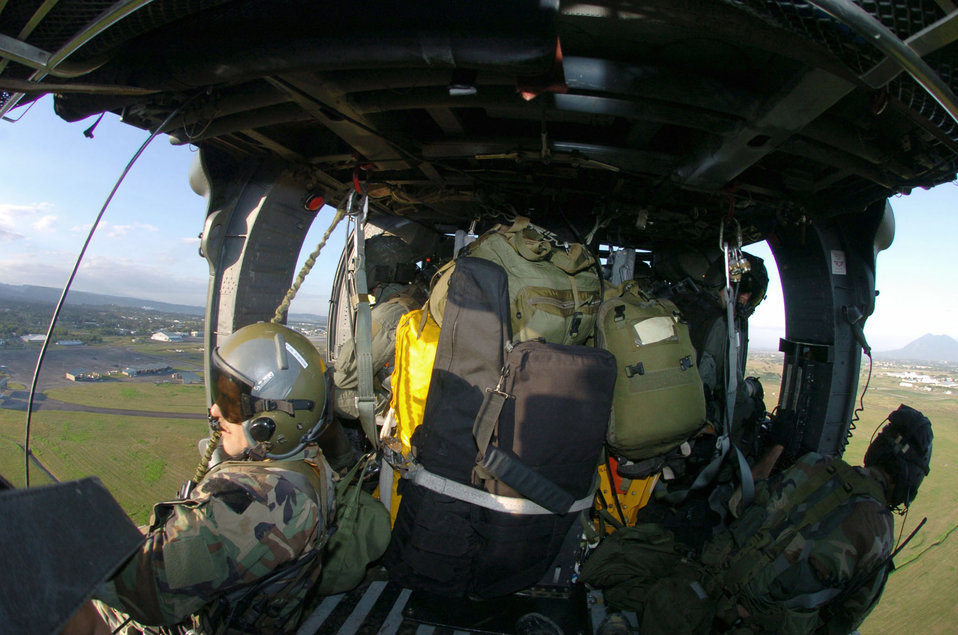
Kadena Airmen aid Philippine typhoon victims

OVER QUEZON PROVINCE, Philippines -- An HH-60 Pave Hawk helicopter from the 33rd Rescue Squadron at Kadena Air Base, Japan, returns to Clark Airfield, Phillipines, after delivering supplies during typhoon relief operations Dec 14. About 600 U.S. military troops are providing humanitarian assistance and disaster relief to residents of Quezon Province where widespread flooding displaced about 168,000 people and left more than 1,400 dead or missing. Air Force and Marine helicopters are flying daily missions to the stricken areas.